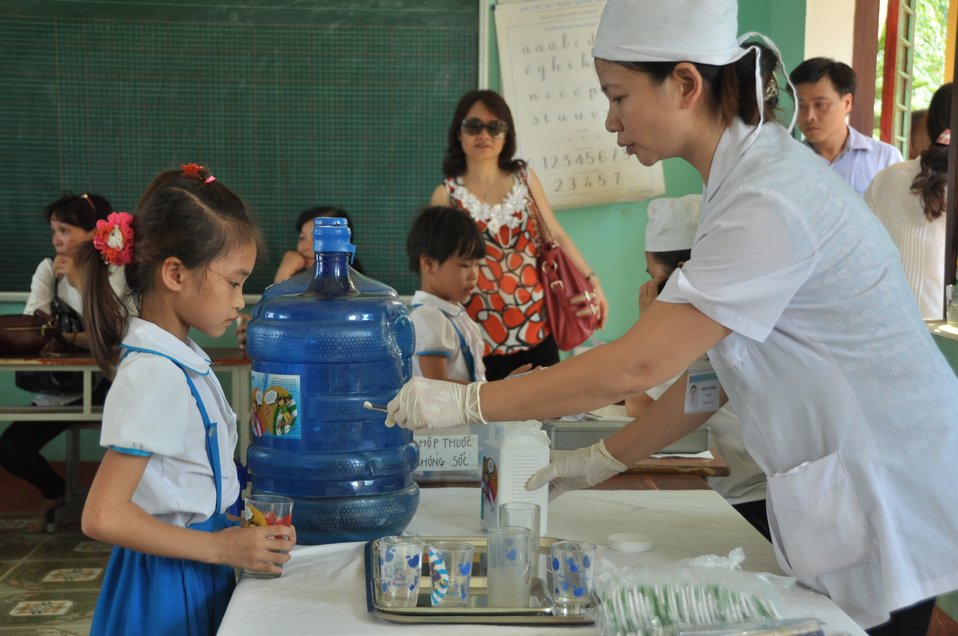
USAID supports deworming education and medication distribution in Bac Giang Province

May 20, 2013